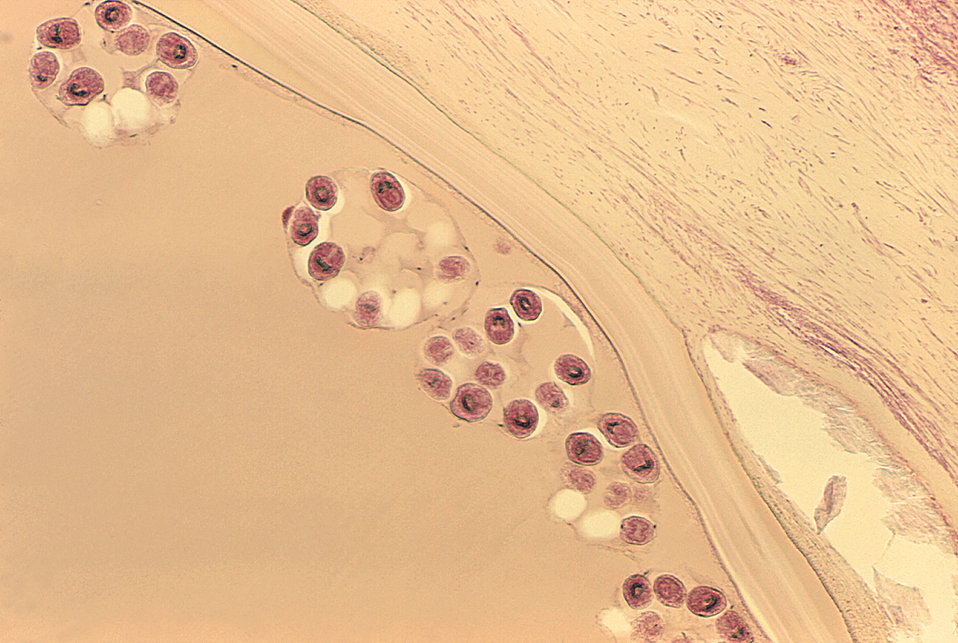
Under a low magnification of only 40X, this photomicrograph revealed numbers of clustered Echinococcus sp. protoscolices in this cut section of a hydatid cyst. During their life cycle within the host, these tapeworms pass through an egg stage, followed by an oncosphere-stage, which is followed by the formation of a cystic stage, resulting in this hydatid cyst. Rupture of these cysts releases the larval protoscolices, and a condition known as 'hydatid sand' (see PHIL 1450).